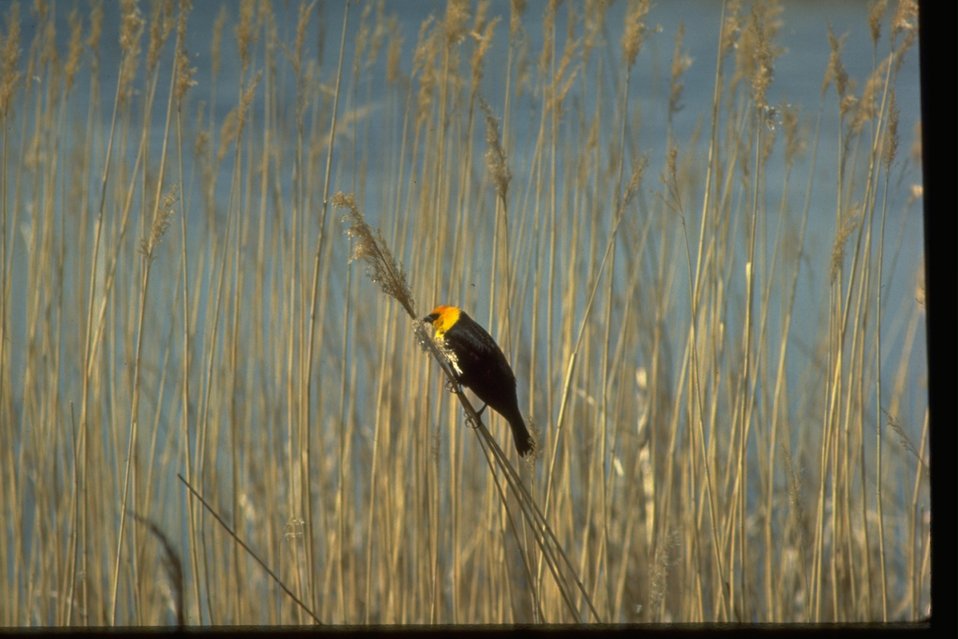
Yellow-headed Black Bird standing on a long piece of dried grass.